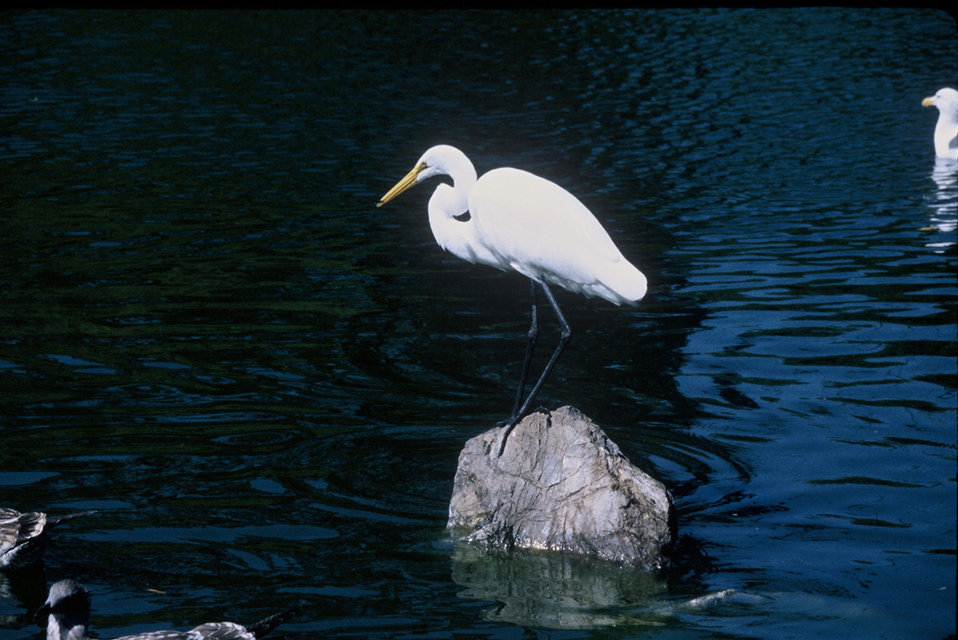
Great Egret.